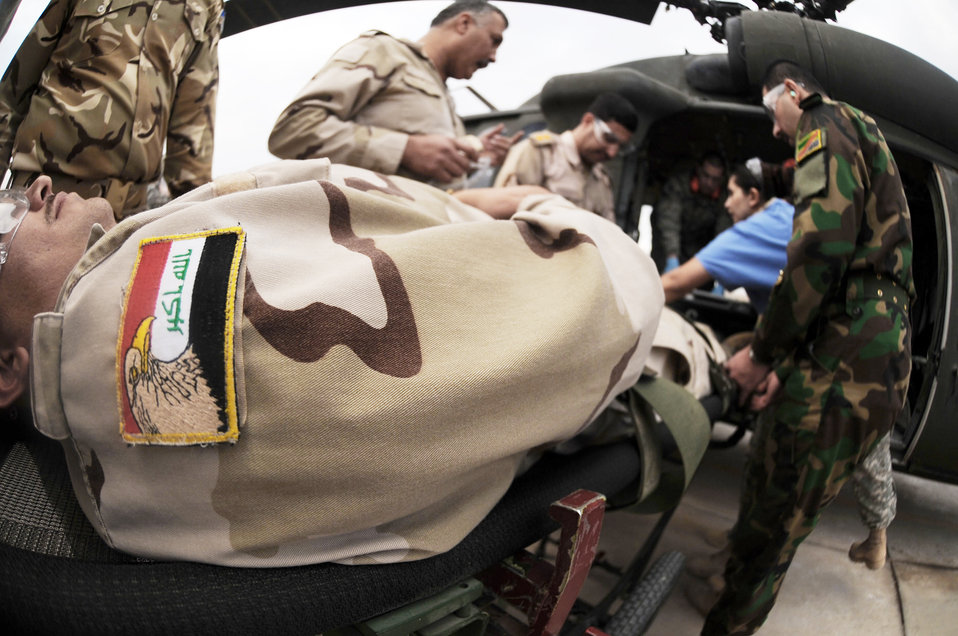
Civil engagement program helps prepare Iraq for future

Iraqi air force members put their skills to the test during medical evacuation training Dec. 21, 2009, at the Air Force Theater Hospital at Joint Base Balad, Iraq. The purpose of the training is to help the Ministry of Defense strengthen its health care system for Iraqi troops.